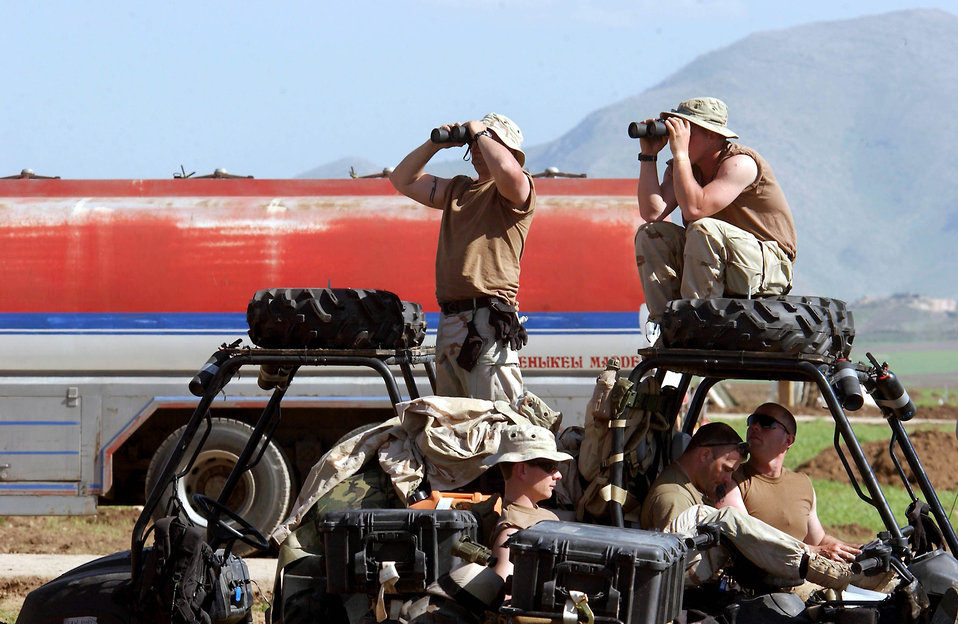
I spy with my little eye...

OPERATION IRAQI FREEDOM -- Explosive Ordinance Disposal members keep an eye on local movement in the area while deployed to a air base in Northern Iraq.